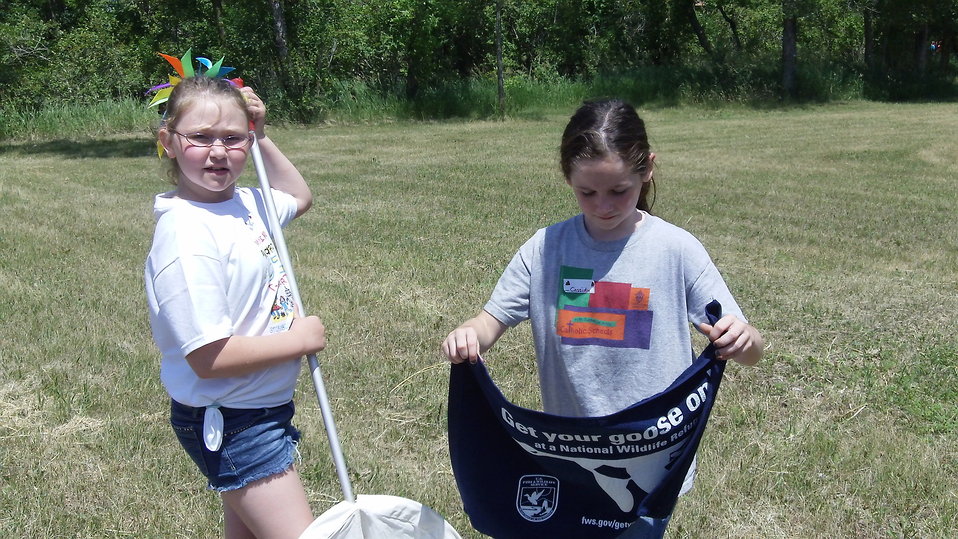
Get Your Goose On!

Photo taken at Huron Wetland Management District in east-central South Dakota.